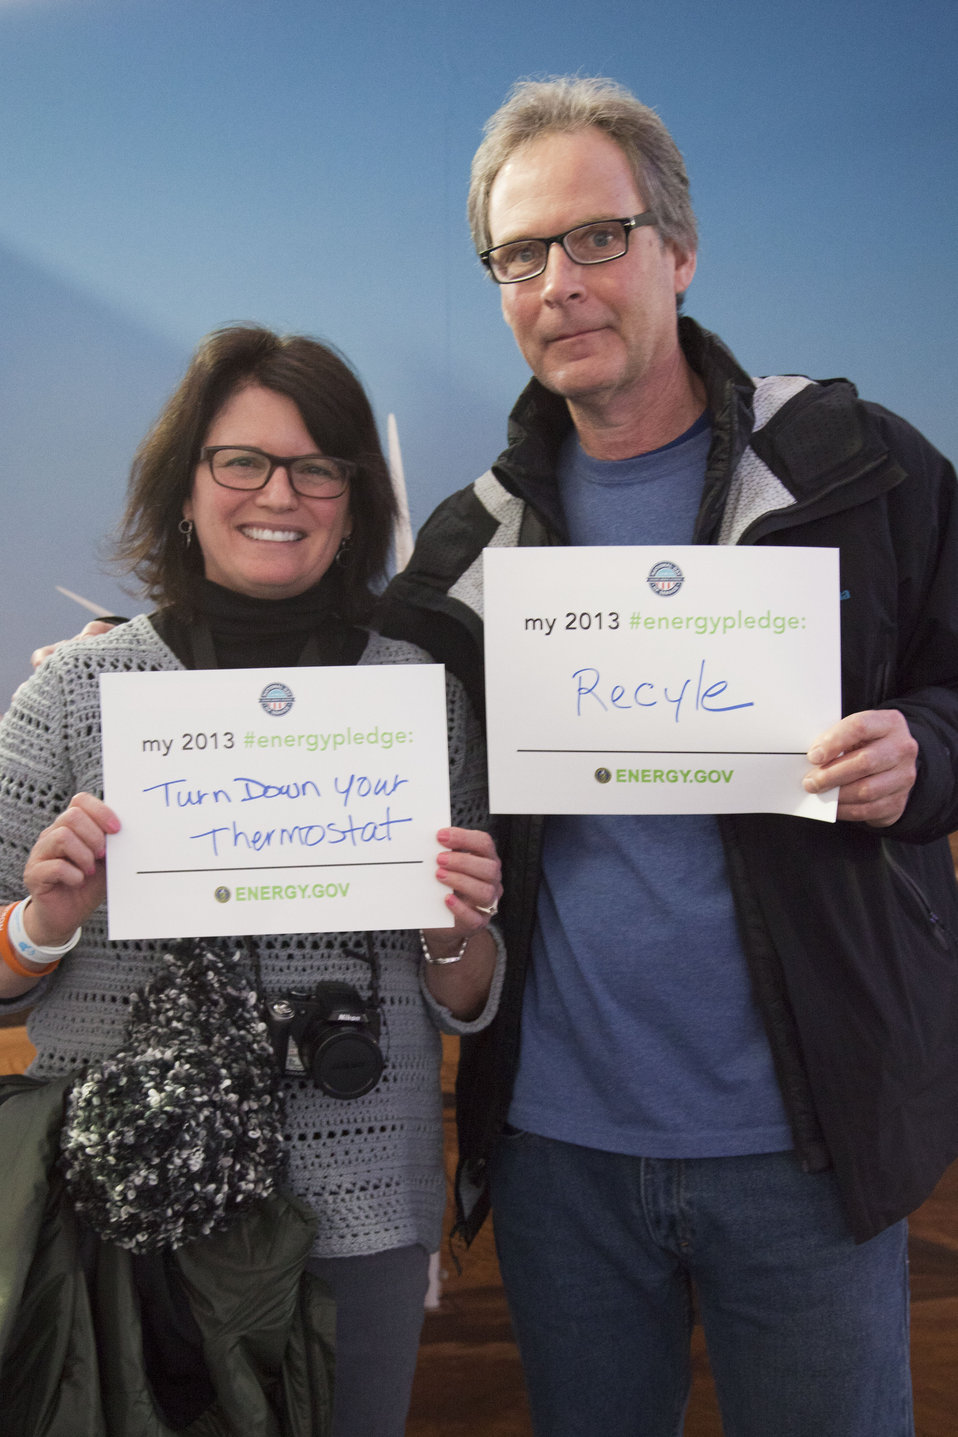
What's your #energypledge?